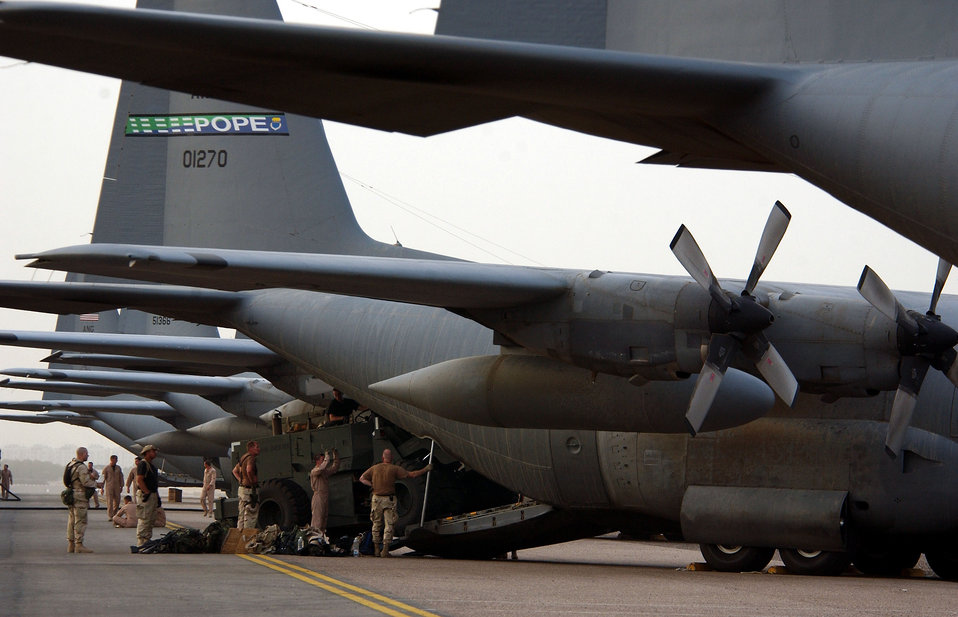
Loading up

OPERATION IRAQI FREEDOM -- Members of the 778th Expeditionary Airlift Squadron, Pope Air Force Base, N.C., and members of the Global Mobility Assessment Team, 621st Air Mobility Group, McGuire AFB, N.J., load a forklift onto a C-130 Hercules in support of Operation Iraqi Freedom on April 11. It is the GAT's responsibility to assess all aspects of the airfield in order to accommodate future strategic airlift from Baghdad airfield.